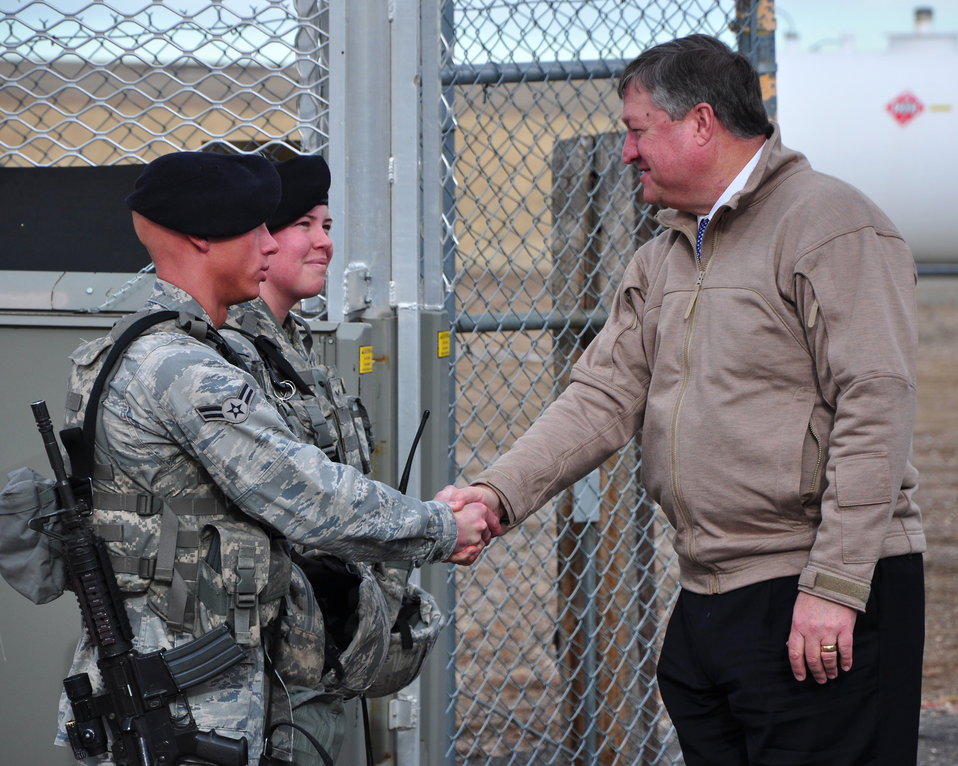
SECAF visits F.E. Warren AFB

Secretary of the Air Force Michael Donley greets Airman 1st Class Isaiah Preece and Airman 1st Class Brittany Fenn, both with the 90th Missile Security Forces Squadron, at a missile alert facility Dec. 23, 2010, during a visit to F. E. Warren Air Force Base, Wyo. While there, Secretary Donley walked through workplaces at 20th Air Force headquarters, 90th Missile Wing maintenance facilities and a missile alert facility to offer his appreciation to Warren Airmen in person for a mission that he has said before demands “the highest standards of performance and accountability.” During his trip, he also had the opportunity to talk with and thank Airmen serving on duty.